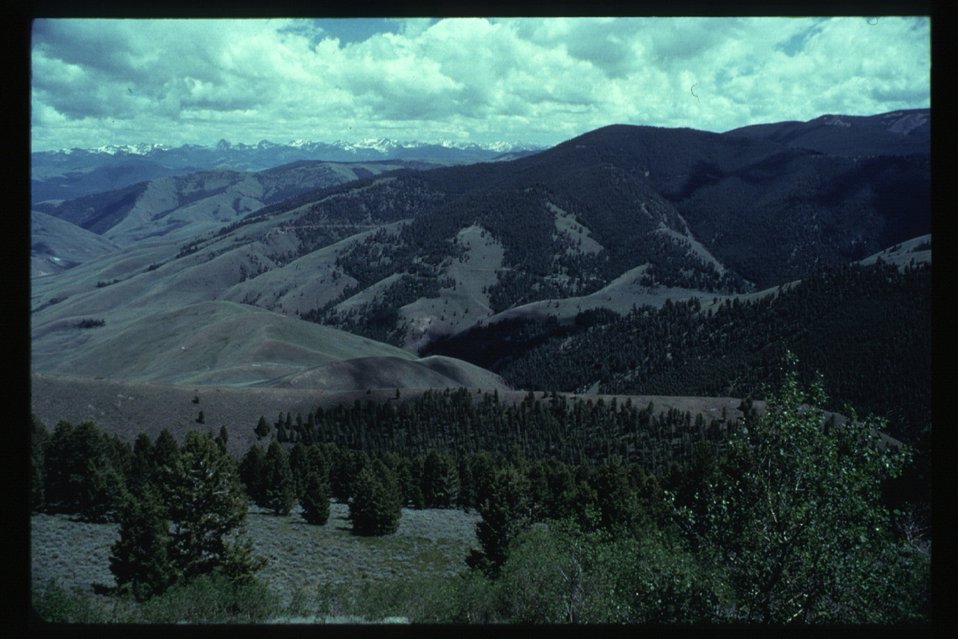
Lewis and Clark National Historic Trail Salmon Field Office UCSC Upper Columbia Salmon Clearwater